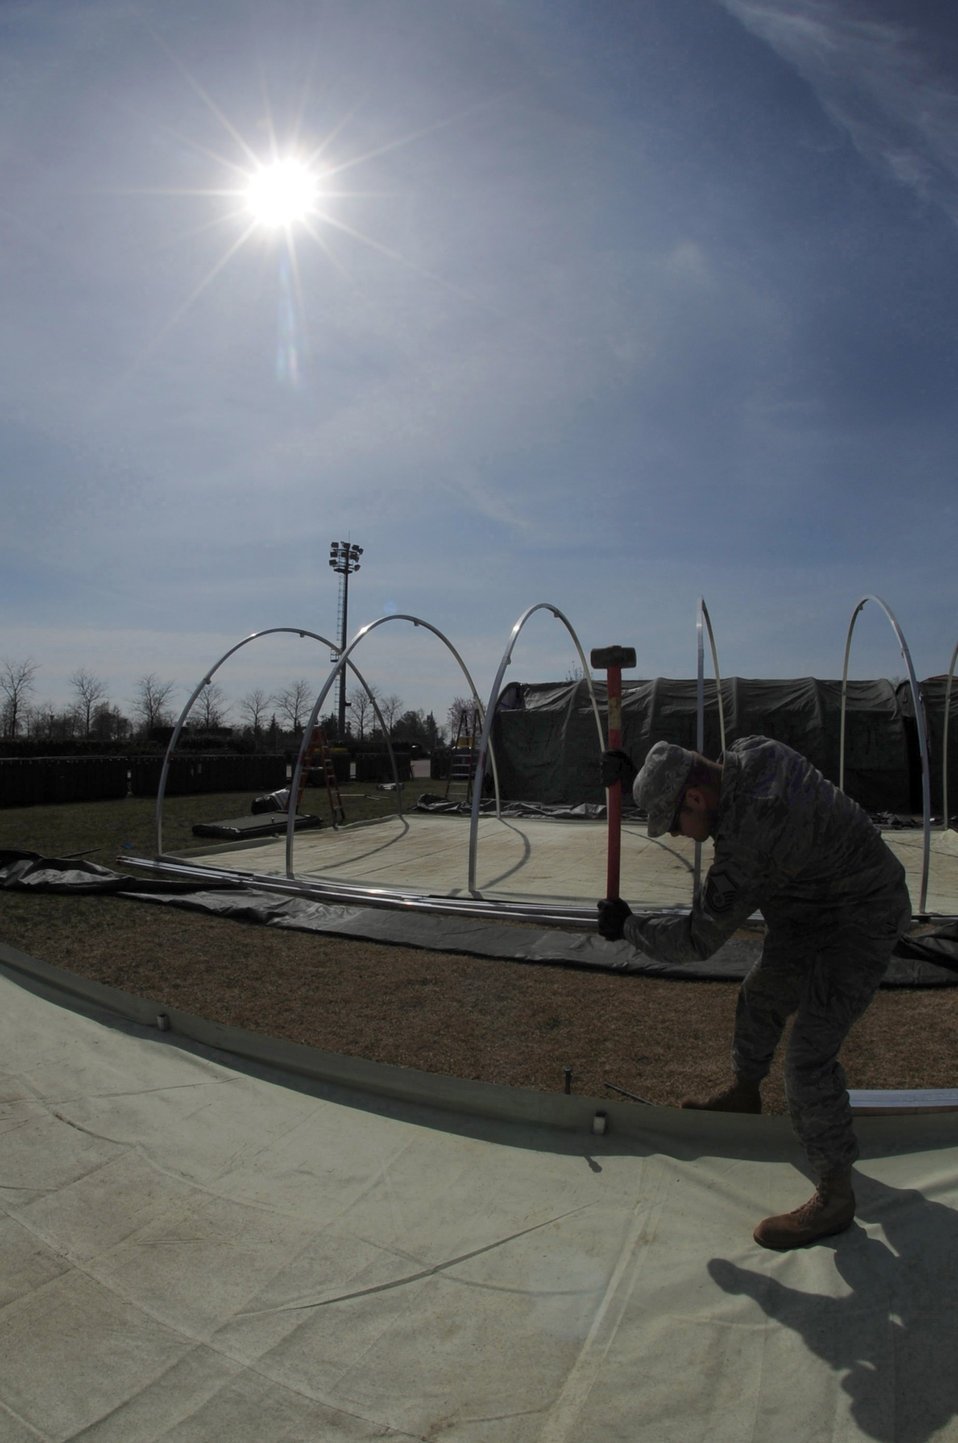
Setting up a tent city

Master Sgt. Anthony Schultz hammers a tent stake March 22, 2011, at Aviano Air Base, Italy, as part of a tent city buildup to house contingency personnel arriving there in support of Operation Odyssey Dawn. Sergeant Schultz is assigned to the 31st Civil Engineer Squadron.